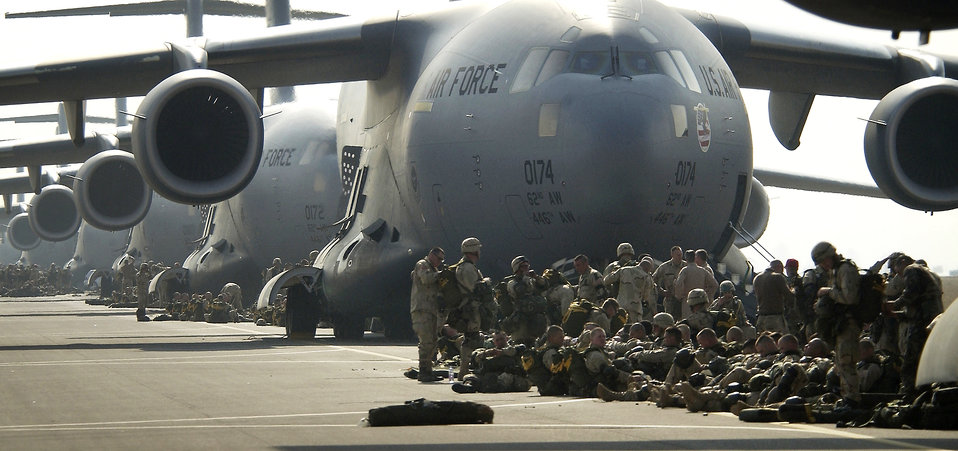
Massive air lift

OPERATION IRAQI FREEDOM -- U.S. Army paratroopers prepare to board a C-17 Globemaster III. Nearly 1,000